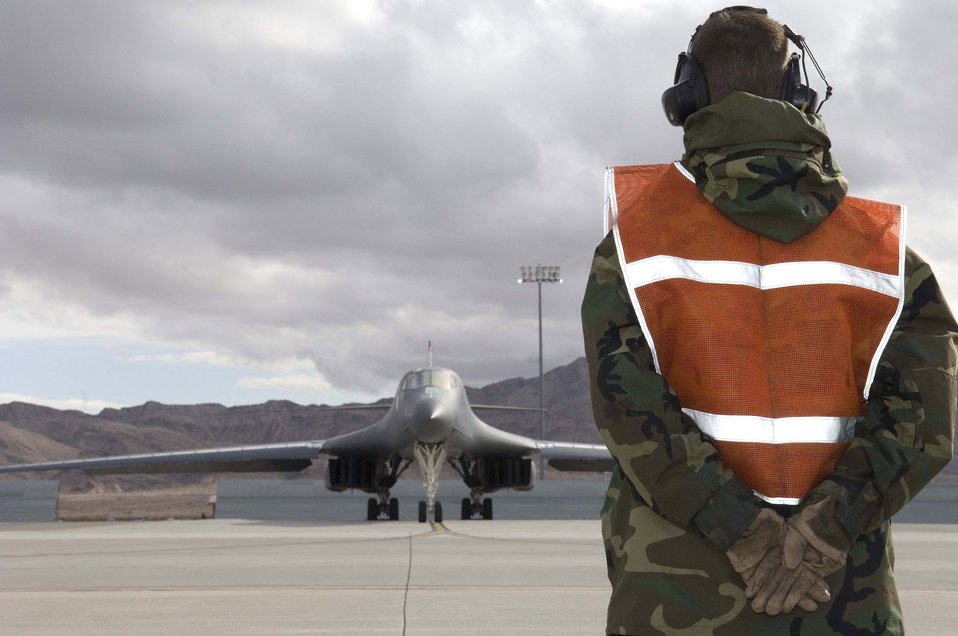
Red Flag 08-2.1

Staff Sgt. Will Clark prepares to marshal out a B-1 Bomber for a mission during exercise Red Flag 08-2.1 at Nellis Air Force Base, Nev. Jan. 25. The B-1 Bombers, which are assigned to the 34th Bomb Squadron Ellsworth AFB, S.D., are flying air interdiction sorties in support of Red Flag. Sergeant Clark is from the 28th Aircraft Maintenance Squadron Ellsworth AFB, S.D.